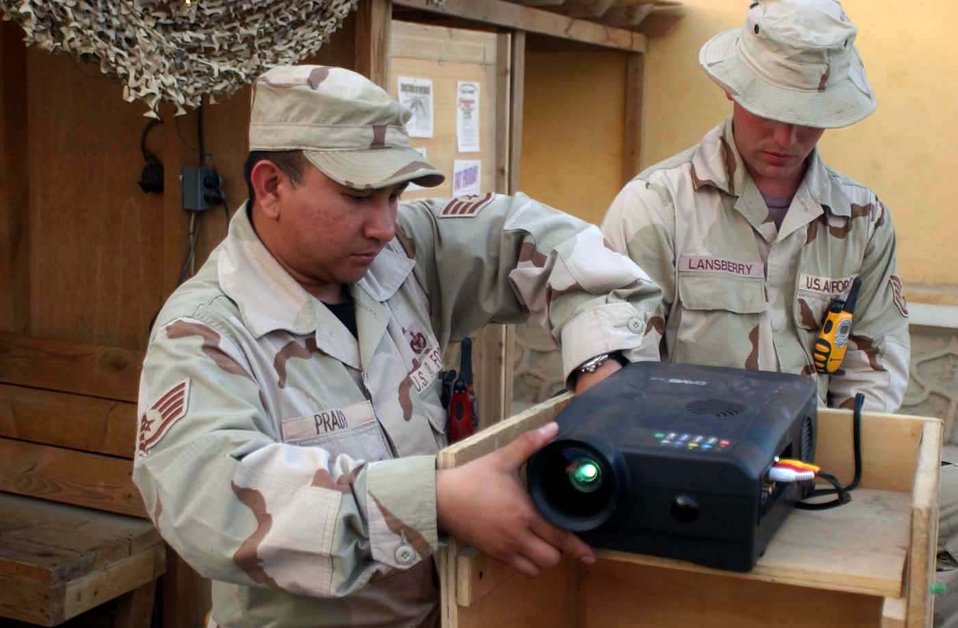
Movie night

BAGRAM AIR BASE, Afghanistan -- Staff Sgt. Eugene Prado (left) sets up equipment for movie night here with assistance from Staff Sgt Joshua Lansberry. Both sergeants are assigned to the 455th Expeditionary Security Forces Squadron.